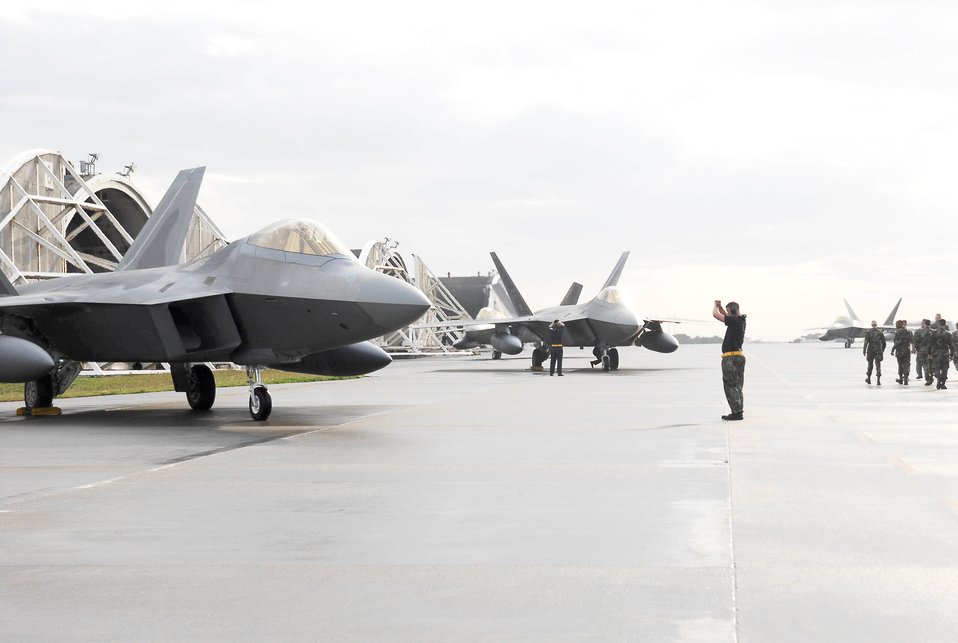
Raptors arrive at Kadena

Crew chiefs park two F-22 Raptors after landing at Kadena Air Base, Japan, Feb. 18, marking the aircraft's first overseas deployment. Twelve Raptors along with more than 250 Airmen are deployed from Langley Air Force Base, Va., to Kadena as part of an air expeditionary force rotation.